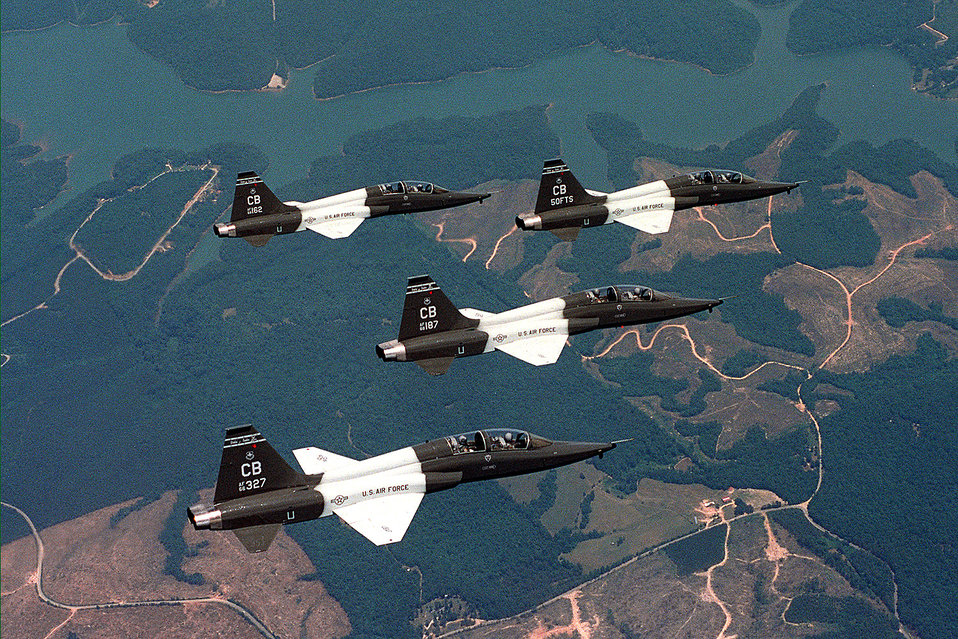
Columbus T-38 crashes in Tennessee

Four T-38 Talons fly in formation. T-38s are twin-engine, high-altitude, supersonic jet trainers used by the 50th Fighter Training Squadron, Columbus Air Force Base, Miss., in a variety of roles because of its design, economy of operations, ease of maintenance, high performance and exceptional safety record. Primarily Air Education and Training Command officials use the aircraft for undergraduate pilot and pilot instructor training. Student pilots fly the T-38 to learn supersonic techniques, aerobatics, formation, night and instrument flying and cross-country navigation. More than 60,000 pilots have earned their wings in the T-38.